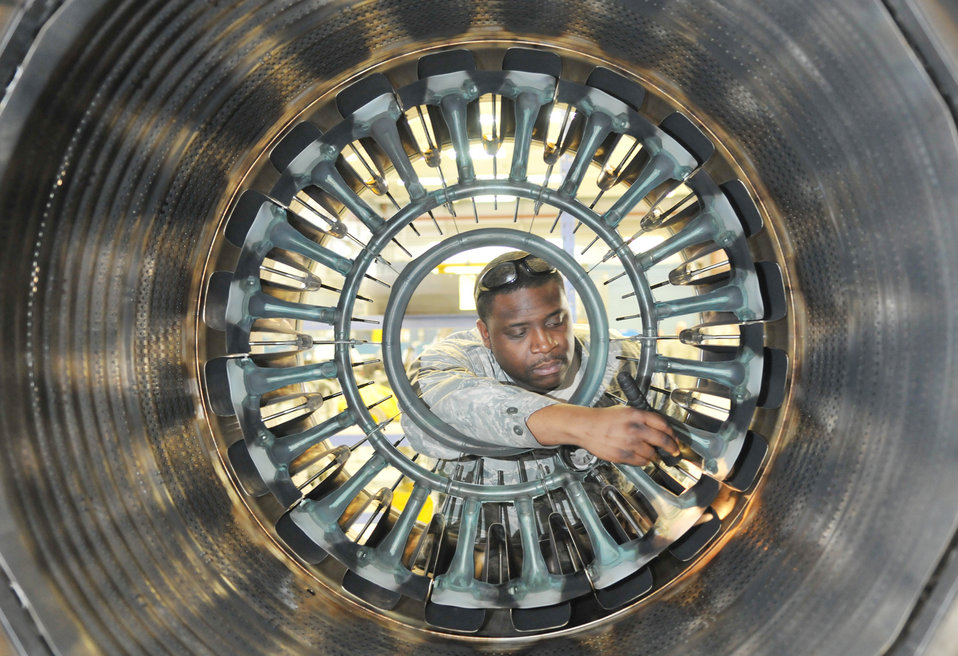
And it goes round and round

Staff Sgt. Christopher Matthews, an aerospace propulsion systems craftsman with the 52nd Component Maintenance Squadron, inspects an F-16 Fighting Falcon exhaust nozzle March 16, 2010, at Spangdahlem Air Base, Germany.